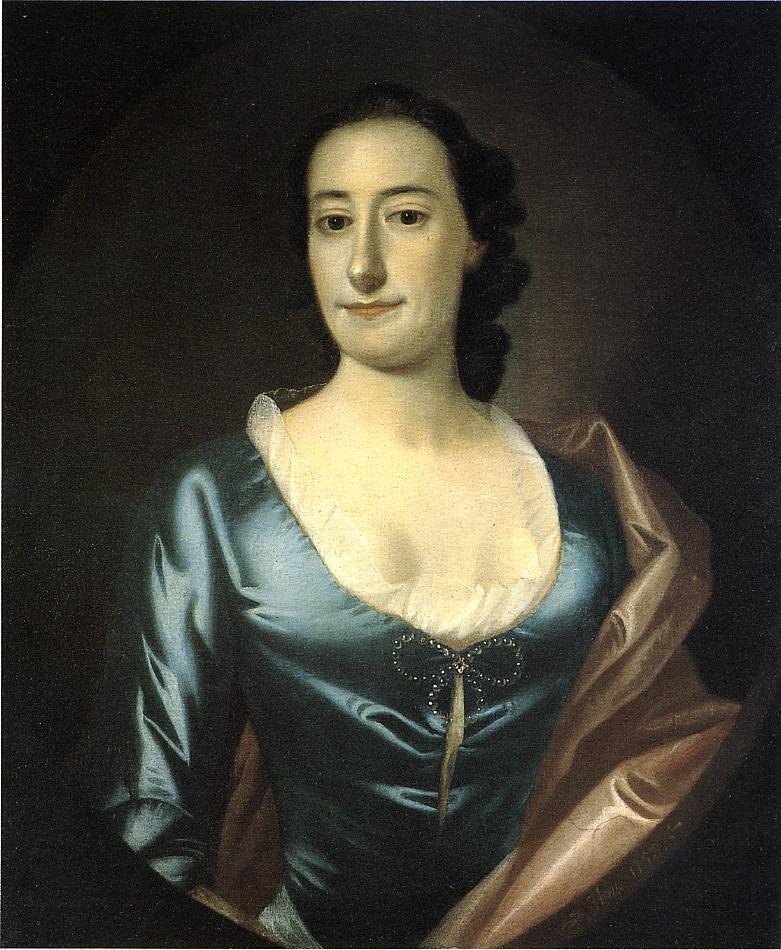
Elizabeth Prioleau Roupell